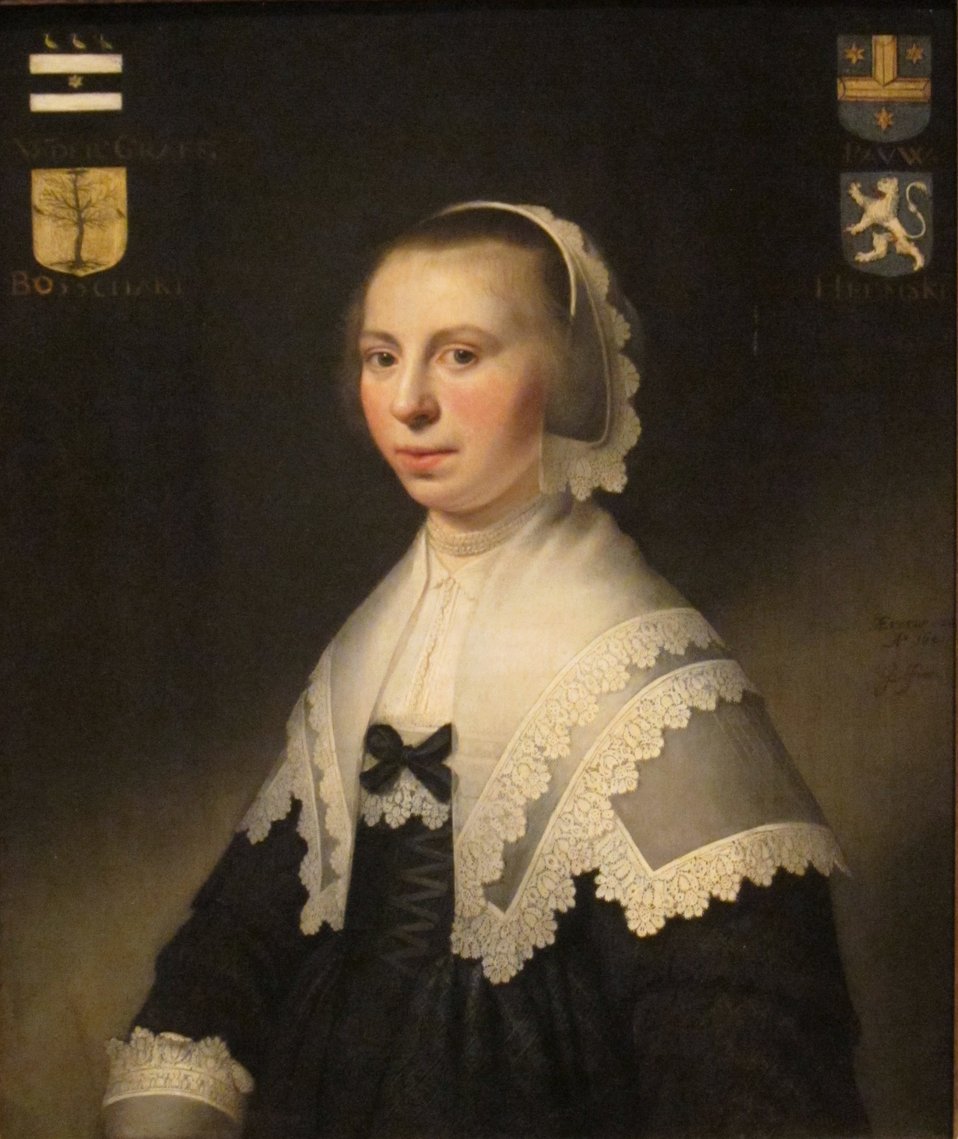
Portrait of Machteld van der Graeff, oil on wood panel painting by Jacob Willemsz Delff (1619-1661), 1641, Dayton Art Institute